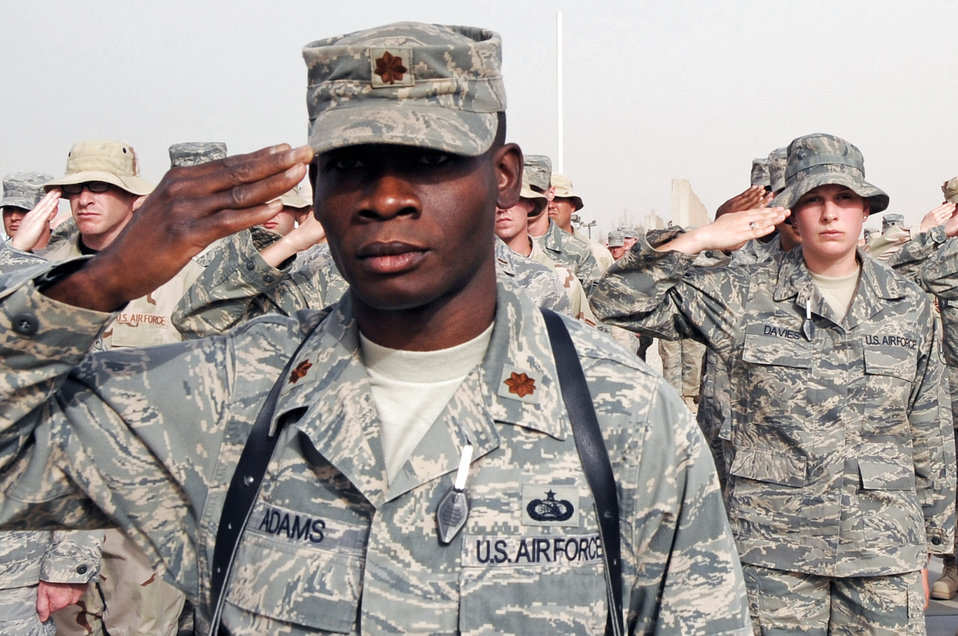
Modern day Tuskegee Airman continues legend

Maj. Terrence Adams salutes during a retreat ceremony May 15 at Ali Base, Iraq. Major Adams was born and raised in Tuskegee, Ala., and is now deployed to a unit in the 332nd Air Expeditionary Wing where the Tuskegee legend continues. Major Adams is the 407th Expeditionary Communications Squadron commander deployed from Tinker Air Force Base, Okla.